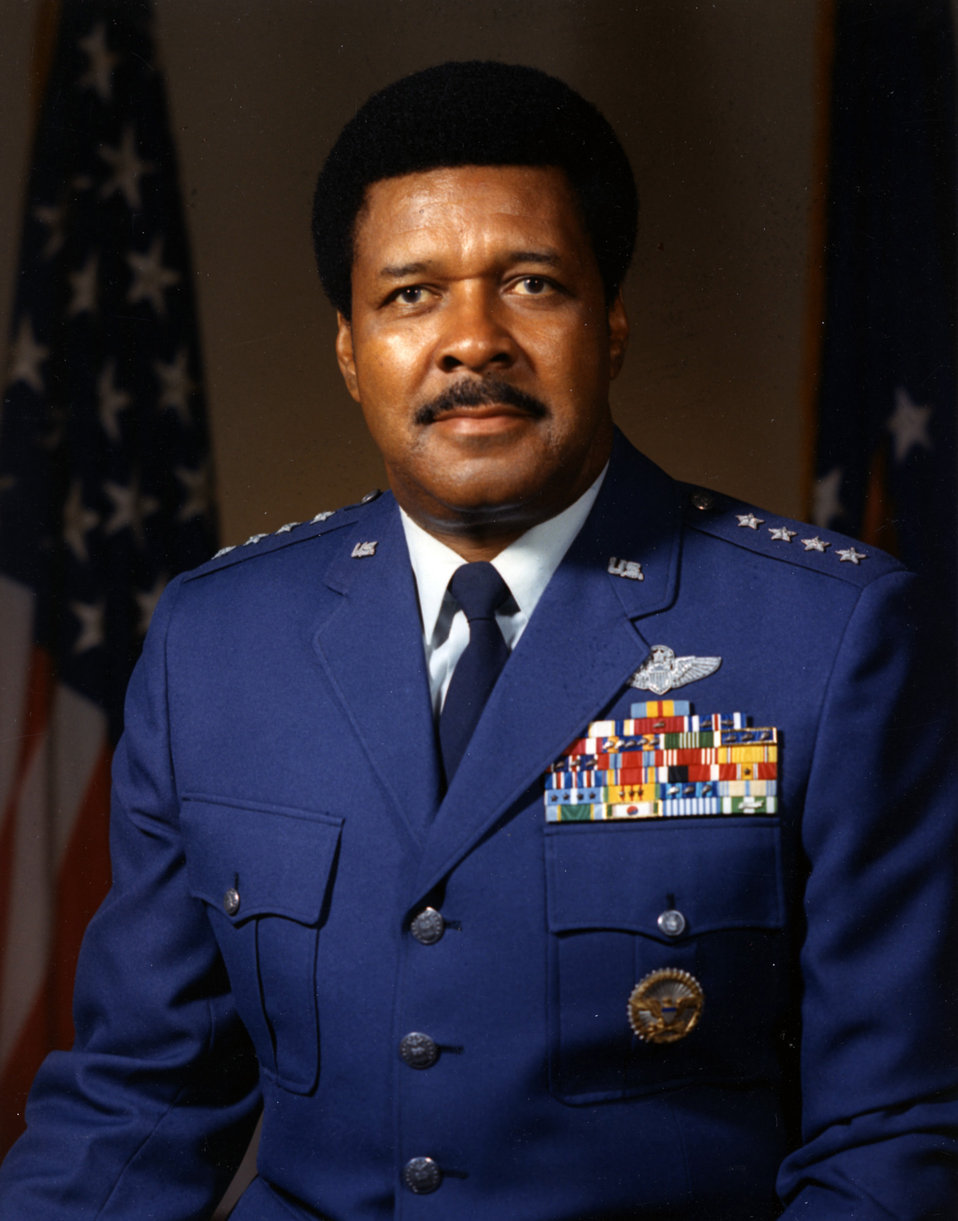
Gen. Daniel

Daniel